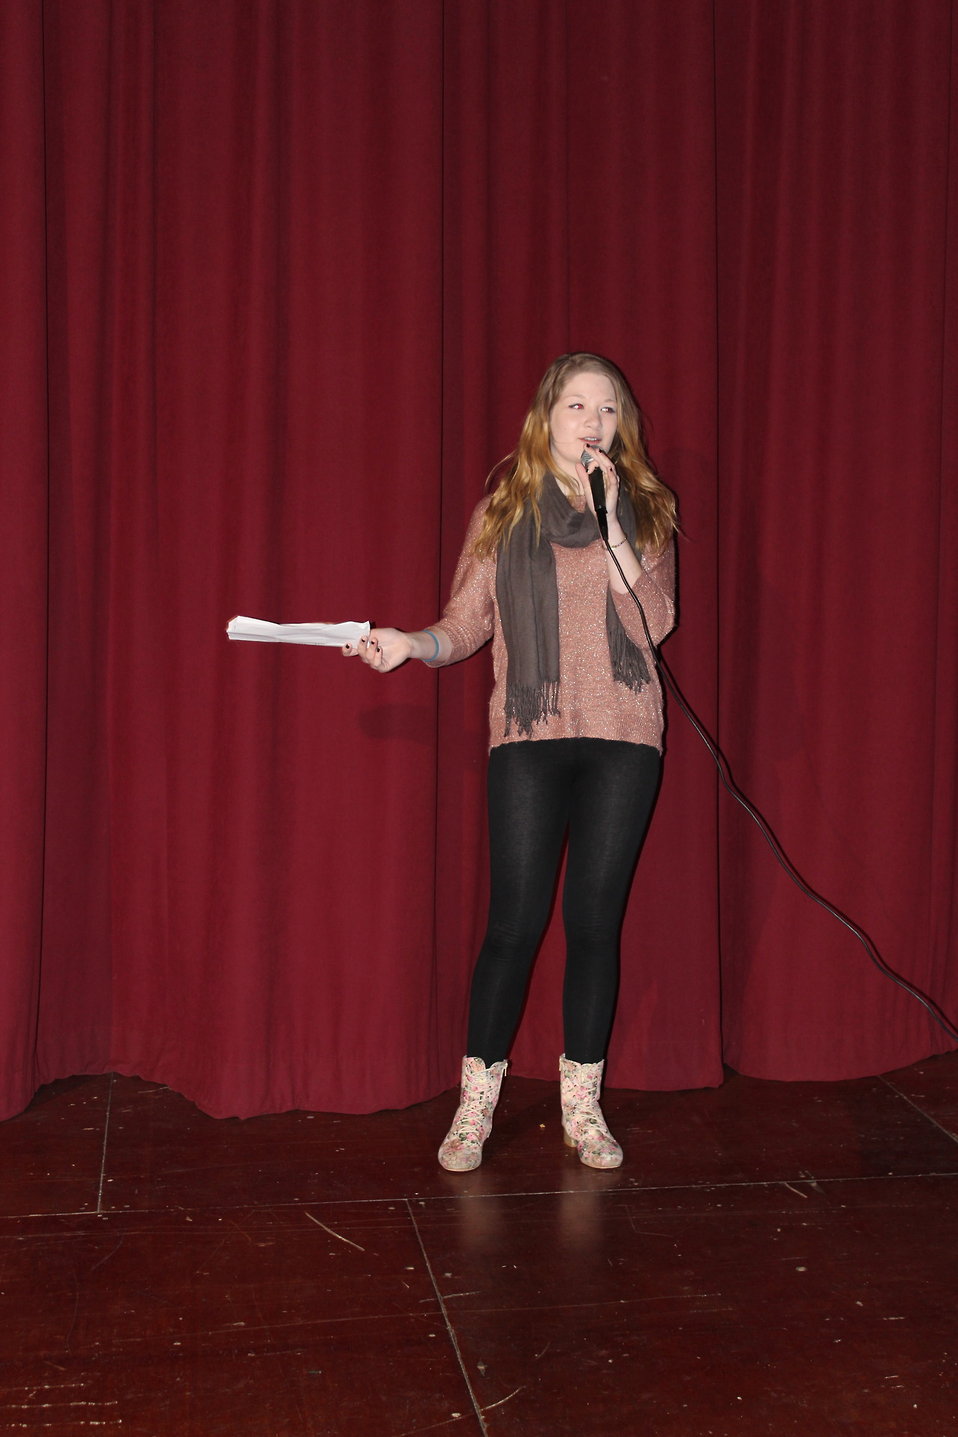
Youth Empowerment Program Poetry Slam held at Alternatives on Jan. 30 which was held to observe National Drug Facts Week and support youth in making healthy lifestyle choices.